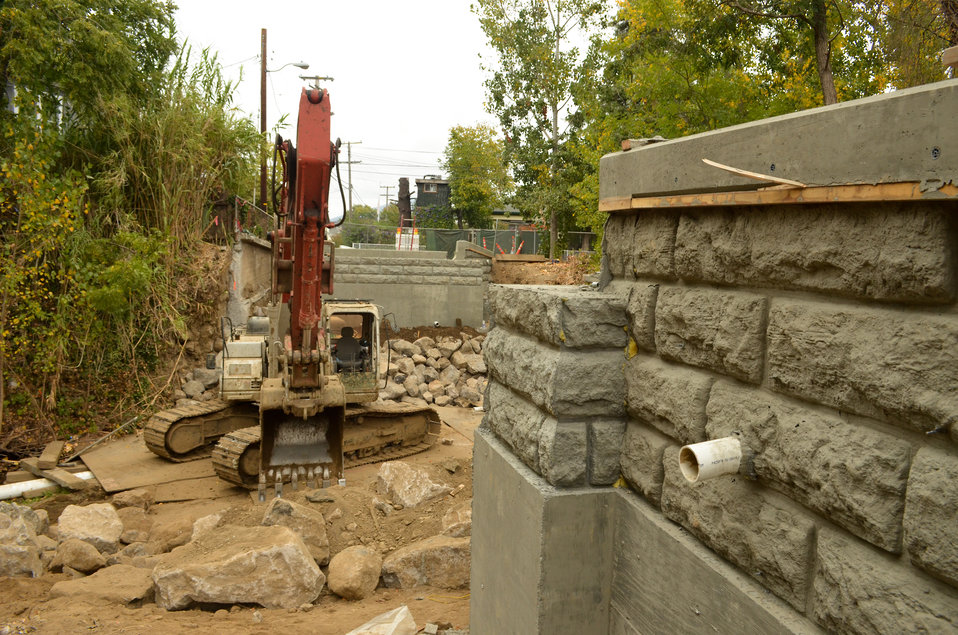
Preparing to replace Napa's Behrens Street Bridge

The foundations of the Behrens Street Bridge in Napa, Calif., shown Oct. 12, 2012, await their new pedestrians-only span. The original bridge, over Napa Creek, was low and often blocked debris from flowing to Napa River, causing flood water to spill the creek’s banks. Replacing the bridge is part of the $14.8 million Napa Creek project, funded by the American Recovery and Reinvestment Act of 2009. The Napa Creek project is a joint effort between the U.S. Army Corps of Engineers, the city of Napa and the Napa County Flood Control and Water Conservation District to reduce the city's flood risk.